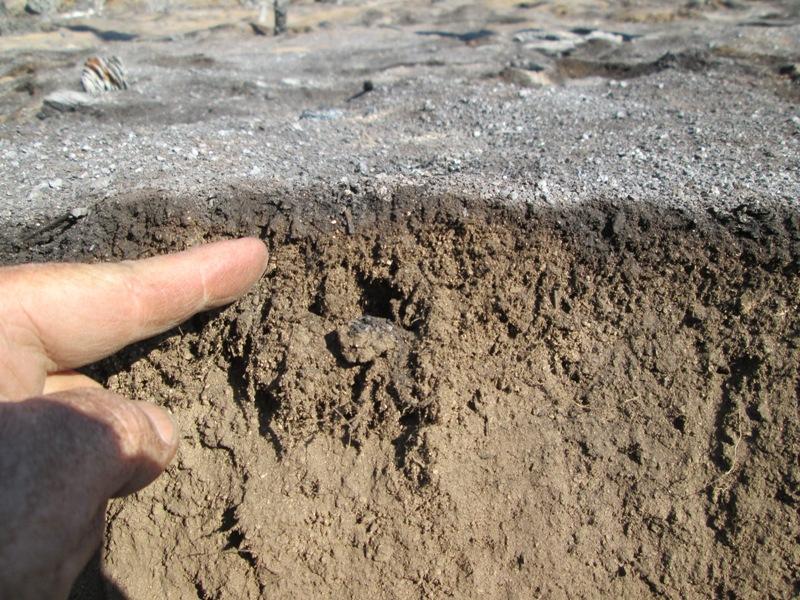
This is an example of soil burn depth after the Rim Fire. BAER is a rapid assessment of burned watersheds by a BAER team to identify imminent post-wildfire threats to human life and safety property and critical natural or cultural resources on National Forest System lands and take immediate actions to implement emergency stabilization measures before the first major storms. Fires result in loss of vegetation exposure of soil to erosion and increased water runoff that may lead to flooding increased sediment debris flows and damage to critical natural and cultural resources. BAER team members implement seeding and mulching installation to prevent erosion, erect temporary water run-off control structures that will protect recovering areas, and installation of warning signs, replace safety related facilities, remove safety hazards, prevent permanent loss of habitat for threatened and endangered species, and prevent the spread of noxious weeds and protect critical cultural resources. The Rim Fire in the Stanislaus National Forest near in California began on Aug. 17, 2013 and is under investigation. The fire has consumed approximately 256,169 acres and is 84% contained.